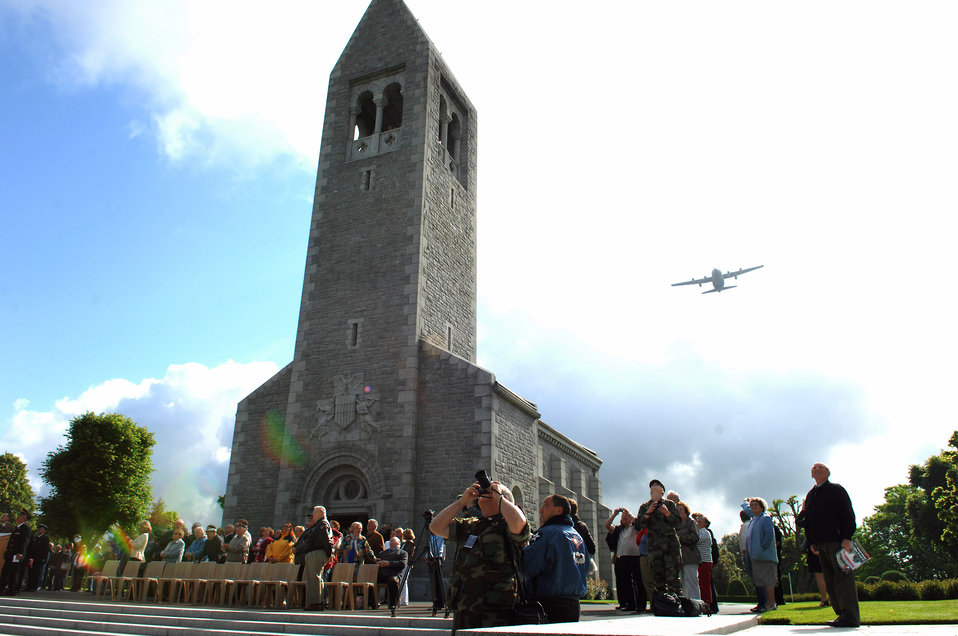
Remembering D-Day

A C-130 Hercules flies over the Brittany American Cemetery June 4 in Normandy France. More than 4,000 American casualties of World War II are buried at this cemetery. The C-130 is from the 37th Airlift Squadron at Ramstein Air Base, Germany.